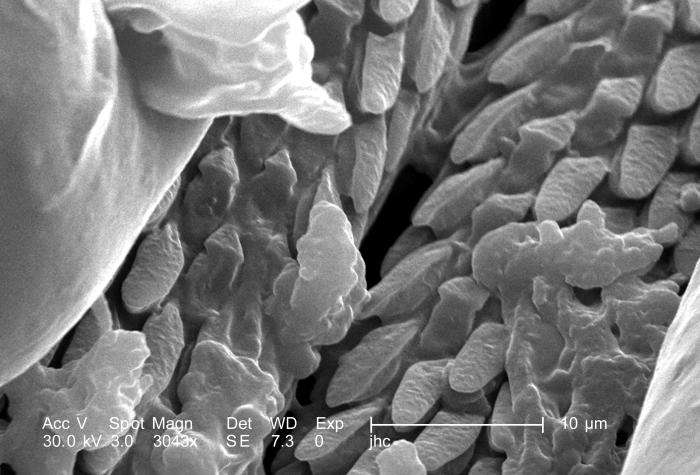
Under a magnification of 3043X, approximately 8 times greater than PHIL 9963, this scanning electron micrograph (SEM) depicted a dorsal view of an unidentified male Dermacentor sp. tick found upon a cat in the suburbs of Decatur, Georgia, which measured approximately 3.5mm from its gnathosoma (i.e., capitulum), which is where its mouthparts are located, to the distal abdominal margin (PHIL 9961). Note in PHIL 9959 and 9960, that the entire dorsum of this tick's abdomen is covered by its tough 'scutum', or 'shield', categorizing it as a male. In female Ixodid-species ticks, the scutum only partially covers the dorsal abdomen. Seen clearly in this image is the foliate covering of the tick's skin-piercing hypostome, which is located in what appears to be a trough between its pedipalps.